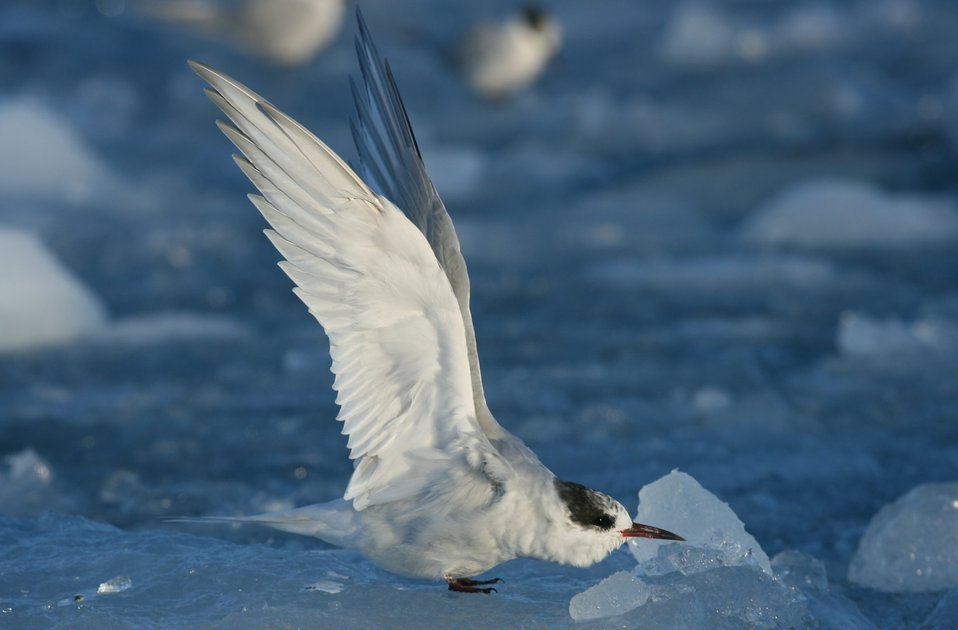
Juvenile Arctic tern (Sterna paradisaea)